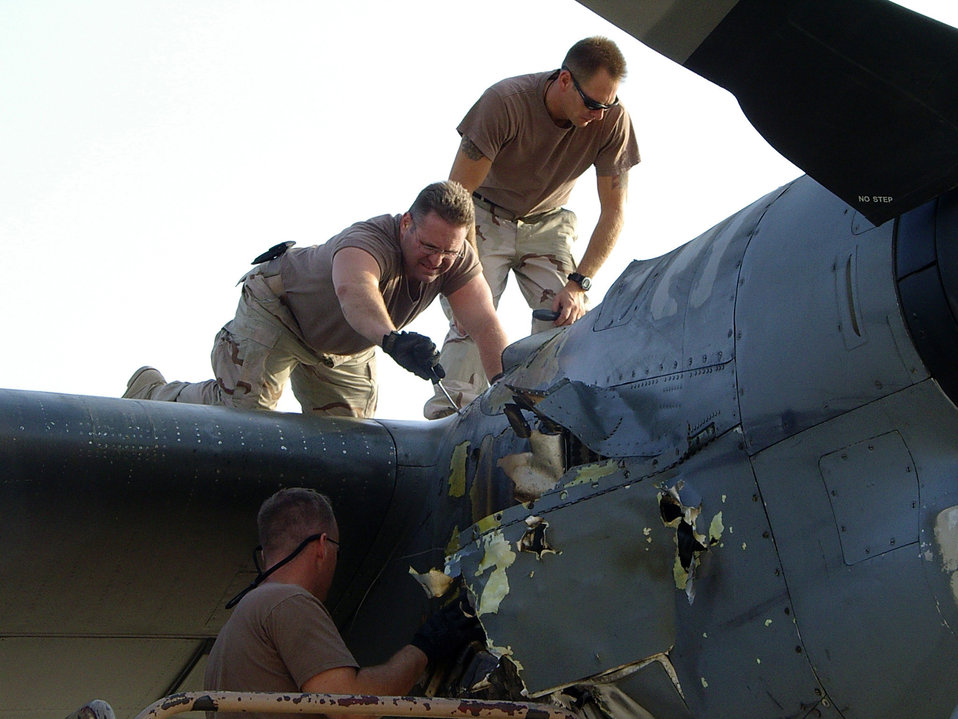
Team deploys to recover damaged aircraft

SOUTHWEST ASIA -- (From right) Tech. Sgt. Rich Bobber surveys the damage on a C-130 Hercules engine as Tech. Sgt. Clark Elwarner (kneeling) and Tech. Sgt. Paul Okon pry off the engine panels to get a look inside. The Airmen are part of a maintenance recovery team from the 386th Expeditionary Maintenance Squadron at a forward-deployed location. They traveled to northern Iraq to repair the battle-damaged C-130 after it was hit by enemy ground fire. Within 48 hours, the team had replaced the engine and certified the aircraft as airworthy so it could be flown home.